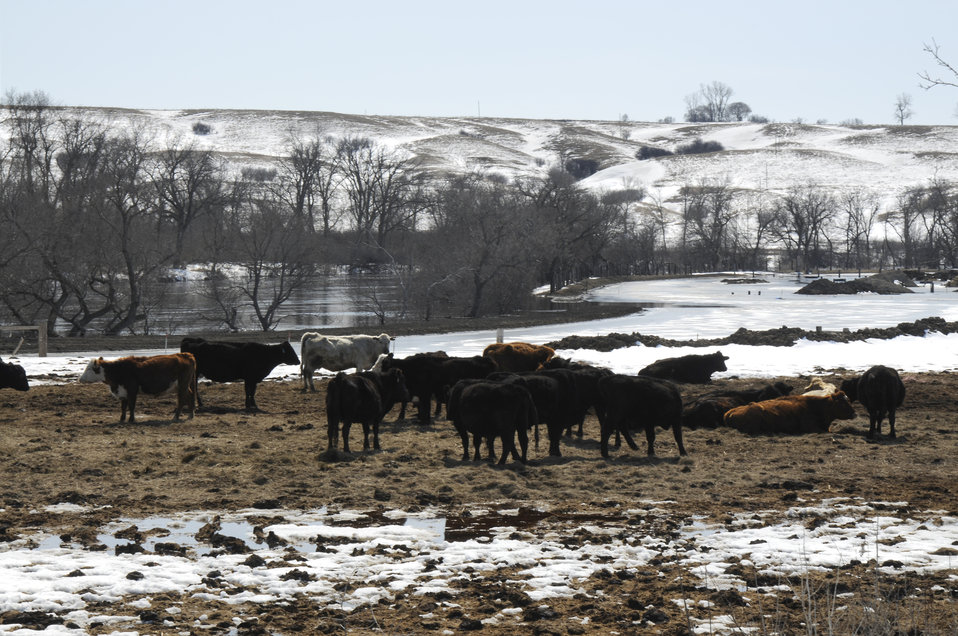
Cattle were stranded on isolated pieces of high ground in North Dakota on April 8, 2009 due to the Red and Missouri Rivers overflowing their banks. North Dakota received abnormally heavy winter snows atop saturated and frozen ground, which was already saturated when it froze at the beginning of winter, melting snow which could not be absorbed by the frozen ground, additional precipitation from a rain storm on March 22, 2009 and a late snowstorm at the end of the month added to the existing snowpack.